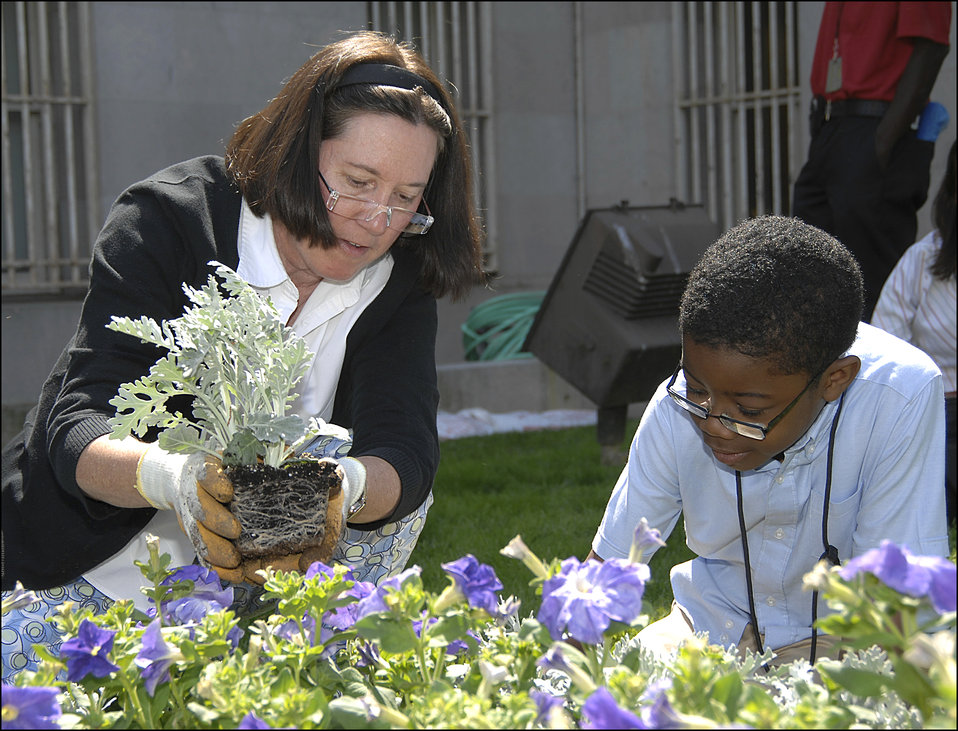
Earth Day/Take Your Children to Work Day, 4/22/10

Take Your Children to Work Day and Earth Day coincided this year; Treasury employees and visiting children planted flowers in front of the Treasury Department for Earth Day on April 22, 2010.